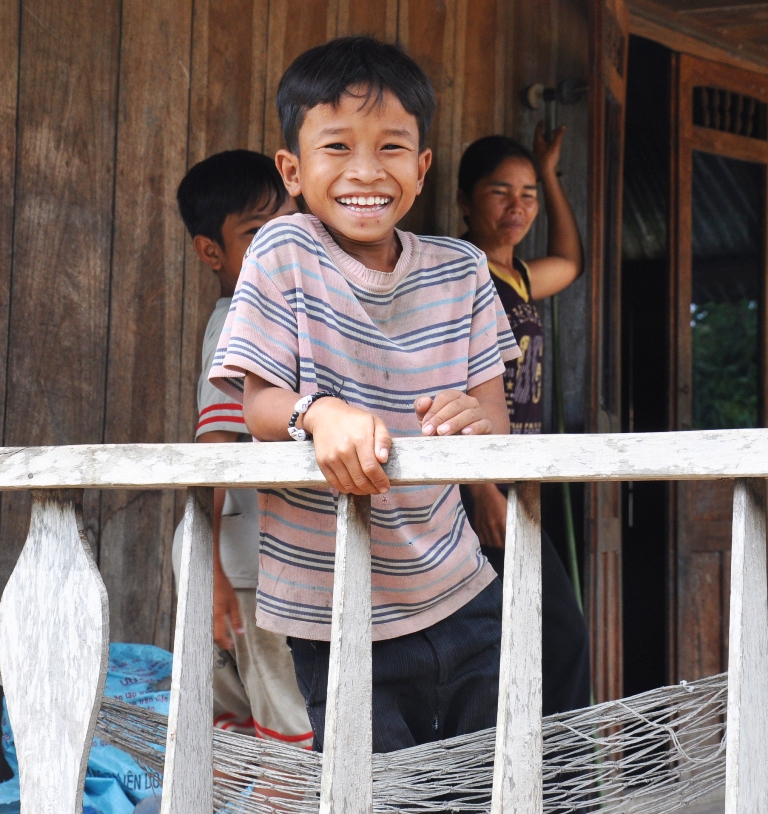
USAID promotes sustainable cocoa farming in rural communities of central Vietnam.